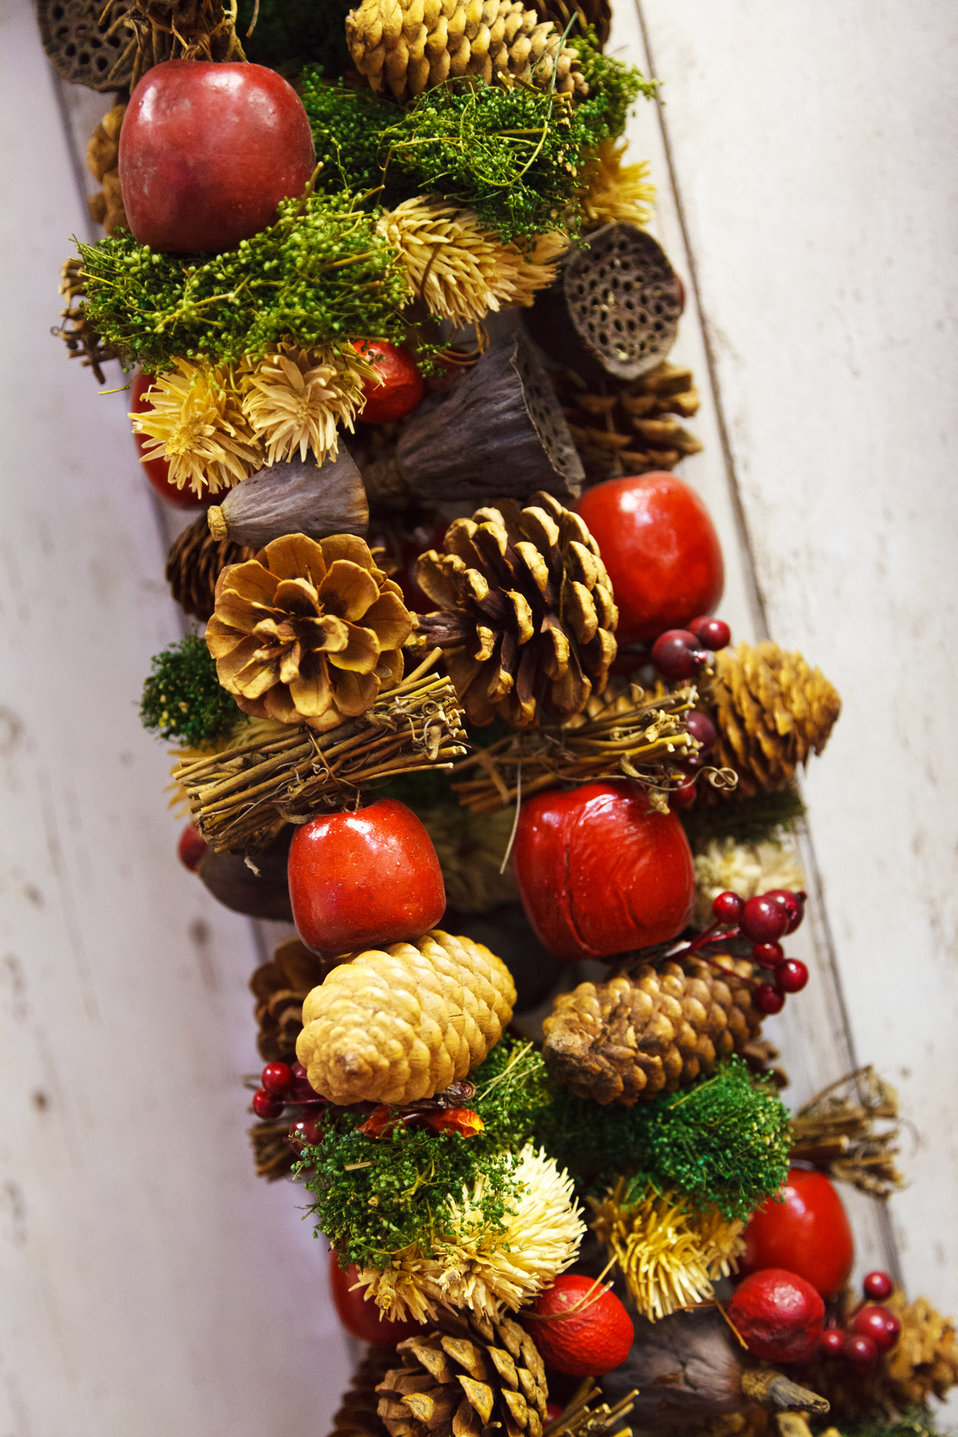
Christmas garland

Natural christmas garland on wooden background.